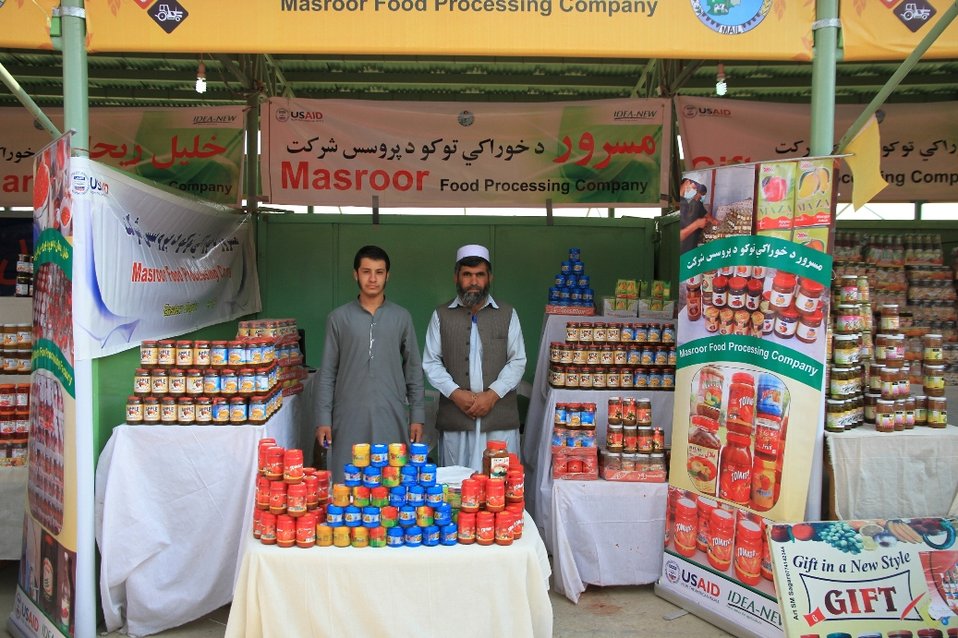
Ag.Fair, October 2013

Abubakar (L) and Sirajuddin (R) display products of Masroor Food Processing Company, an IDEA-NEW assisted business Orr at Kabul International Ag.Fair, October, 2013